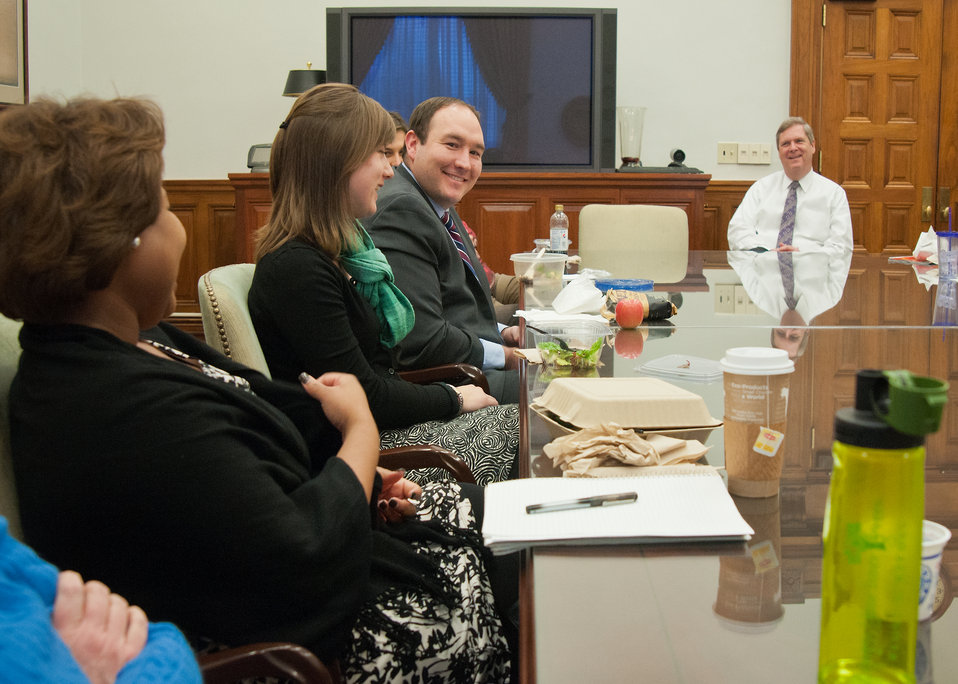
Occasionally Agriculture Secretary Tom Vilsack meets with members of his cabinet for a Brown Bag lunch to discuss the role they play and to thank them for their dedication and diligence. Secretary Vilsack met with staff members of the Office of Congressional Relations in Washington, D.C. on Monday, January 23, 2012. From left: Ashlee Johnson, Special Assistant, Monica Wyant, Special Assistant Todd Batta, Legislative Director, Conservation, Energy, Budget and Appropriations and Dairy and Secretary Vilsack. Secretary Vilsack asked everyone at the luncheon to describe his or her first day at a job.